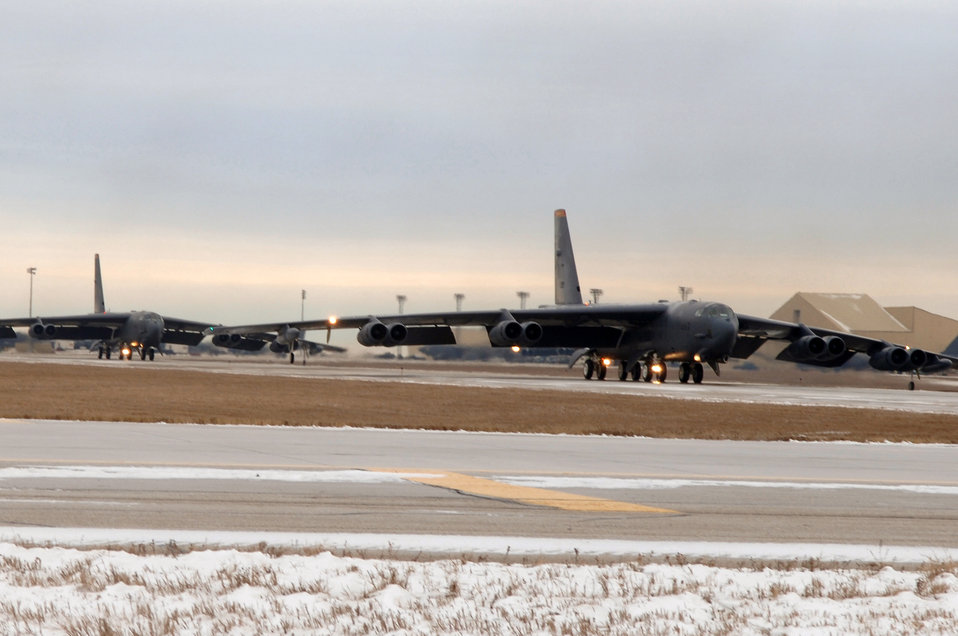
'Buff' launch

MINOT AIR FORCE BASE, N.D. (AFPN) -- B-52H Stratofortress bombers taxi before taking off for a mission. Nine of the huge bombers took part in a rapid-launch exercise Dec. 9 to test the base's ability to respond quickly to national directives.